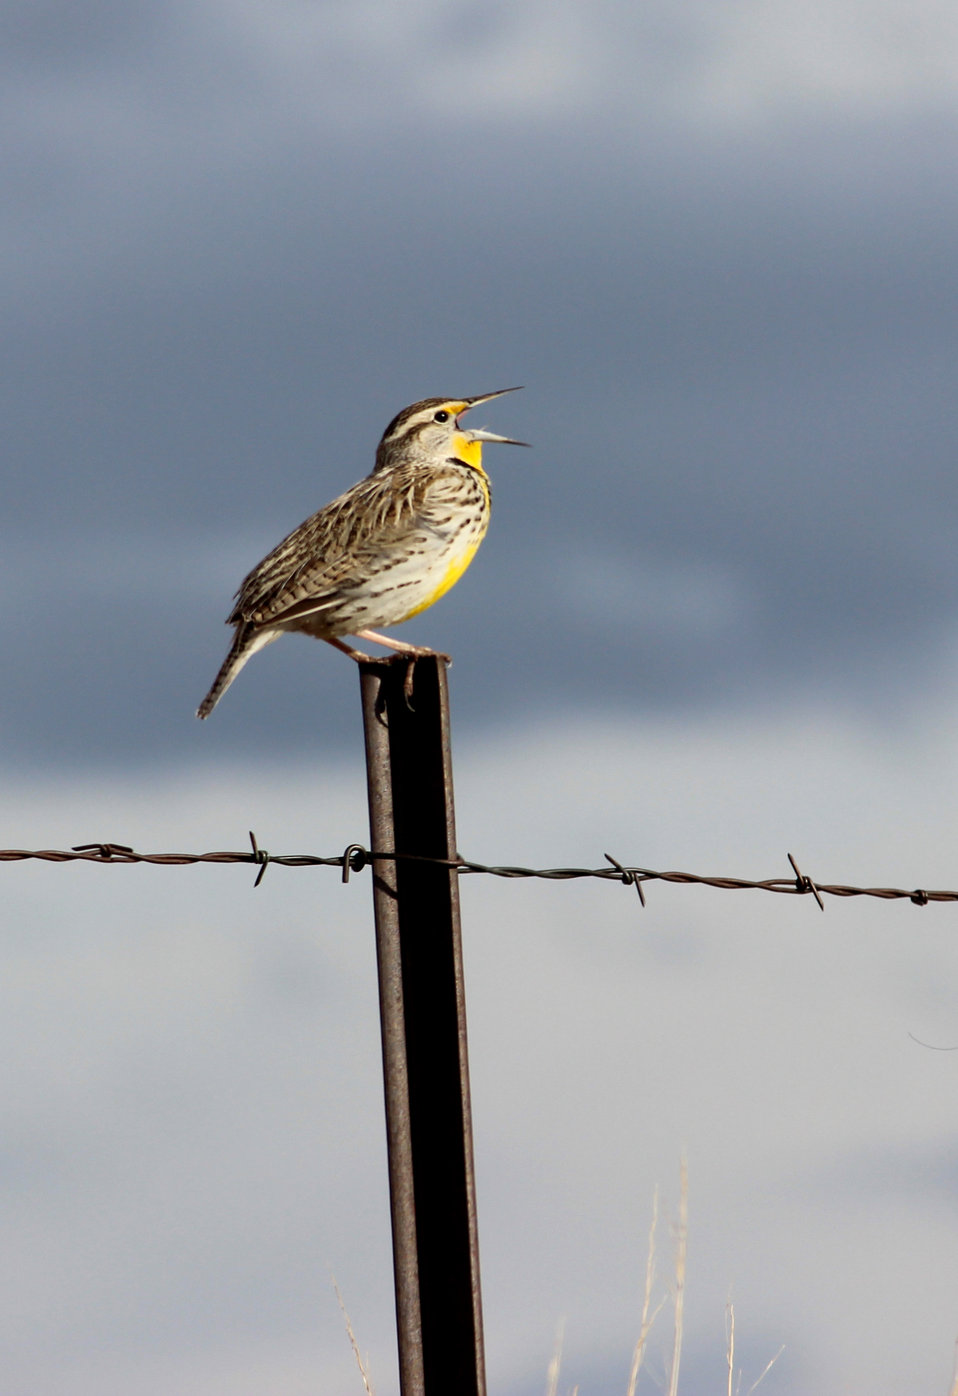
Western Meadowlark Sings of Spring

It's April 6th and spring is upon us! This meadowlark is the state bird of North Dakota (and many other states), and makes its nest on the ground in prairie and pastures.